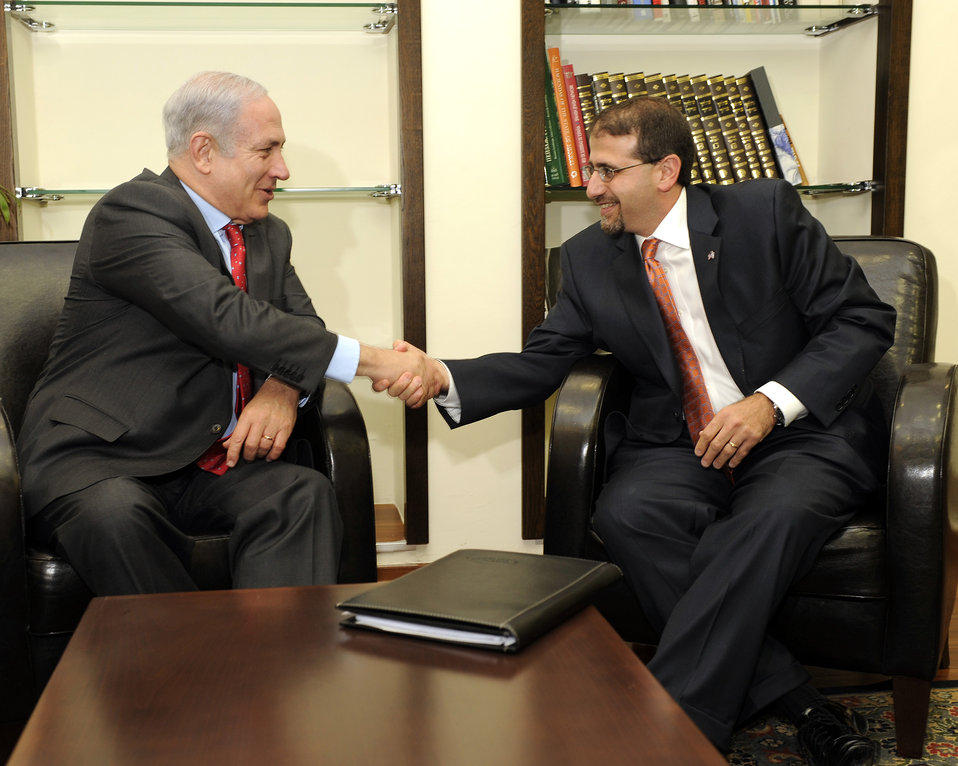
Ambassador Shapiro Meets With Israeli Prime Minister Netanyahu

U.S. Ambassador to Israel Daniel Shapiro meets with Israeli Prime Minister Benjamin Netanyahu at the Prime Minister's office in Tel Aviv, Israel, on August 4, 2011.